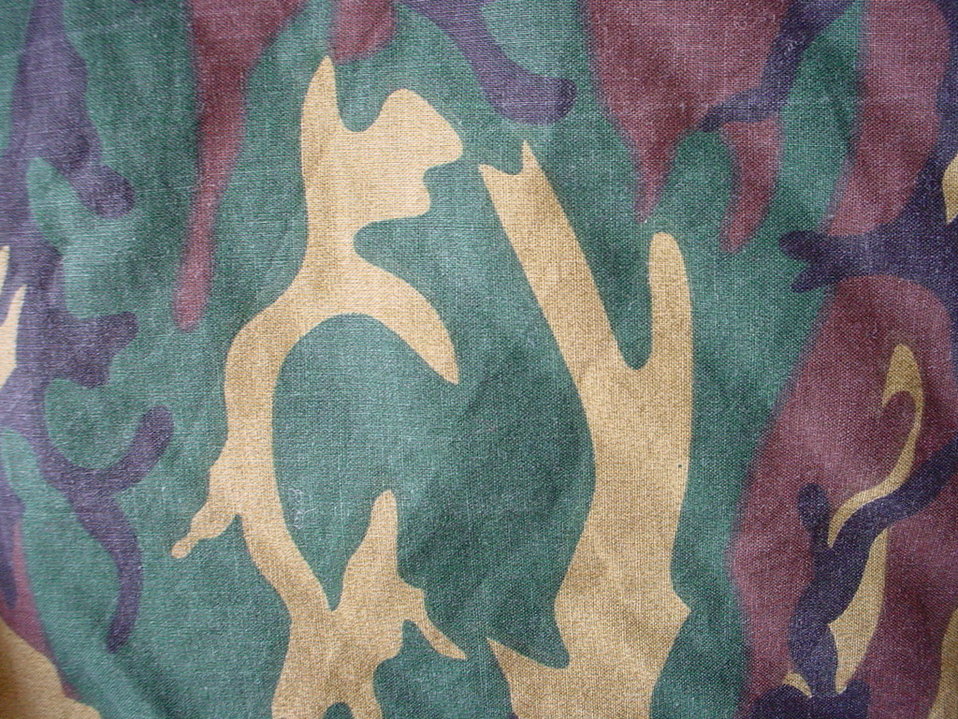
Fran√ßais†: exemple de tissu camouflage